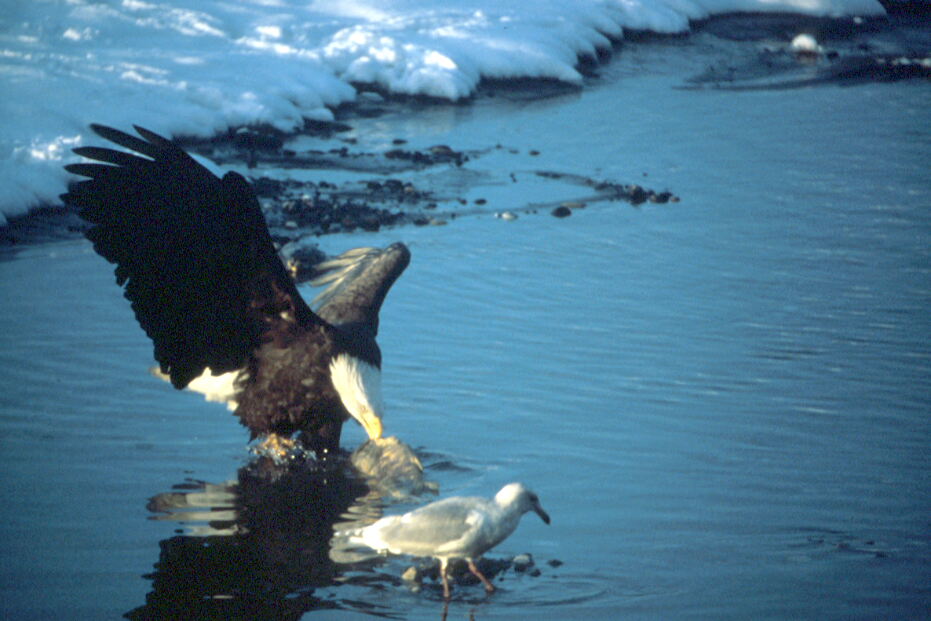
Bald Eagle.